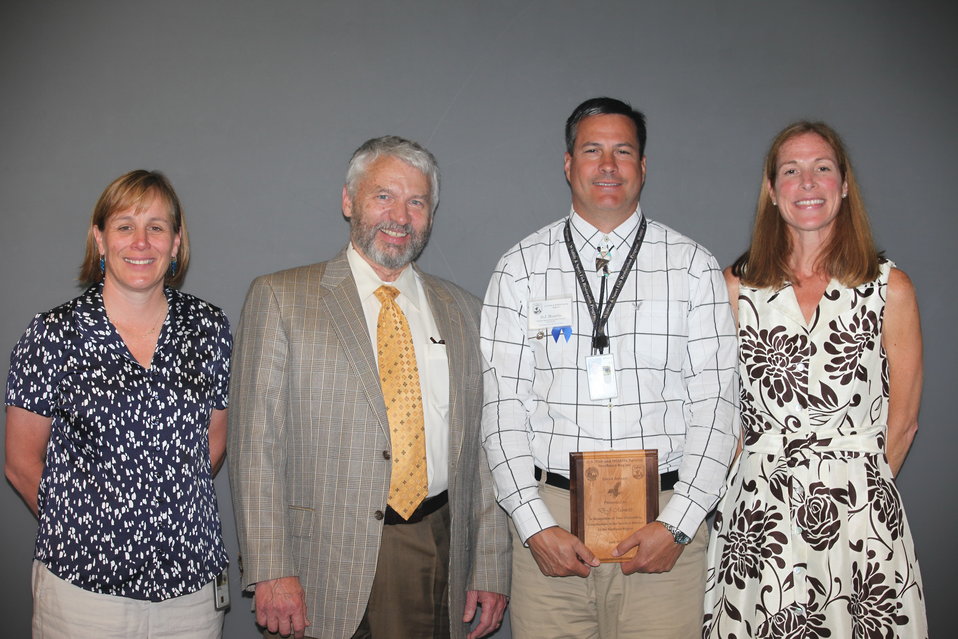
D.J. Monette, of the Regional Office- External Affairs, recieved an Eagle Award.
From left to right: Deputy Regional Director Deb Rocque, Deputy Director Rowan Gould, D.J. Monette, and Regional Director Wendi Weber